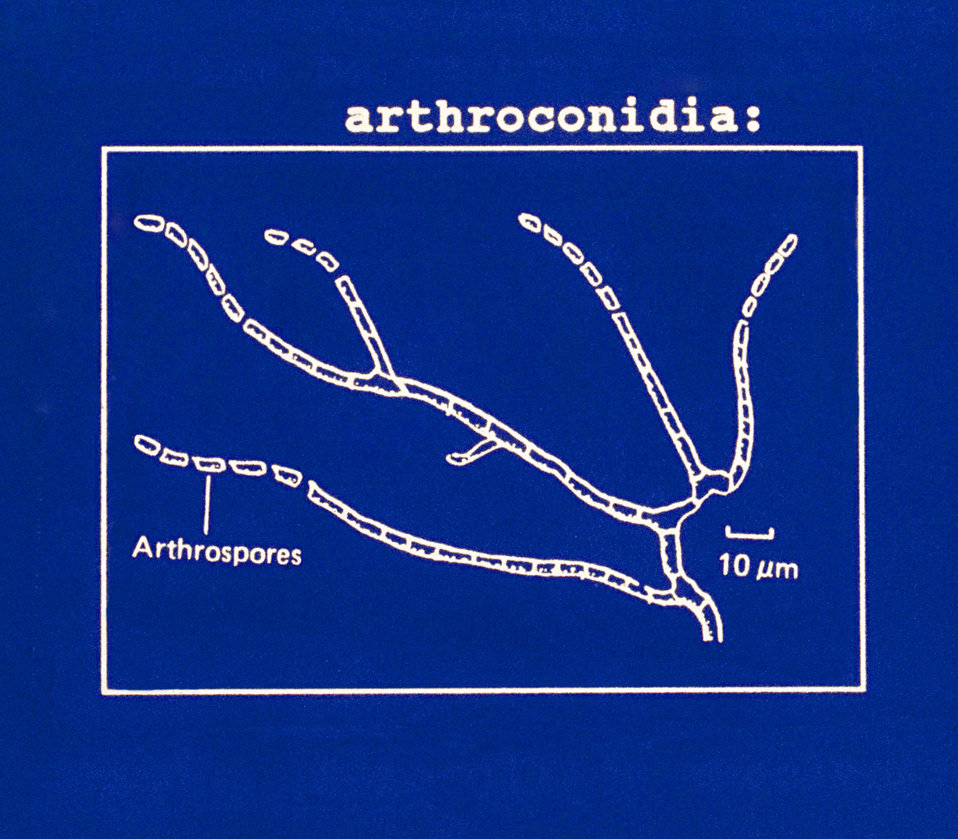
Illustration of asexual reproduction in ascomycetes: arthroconidia